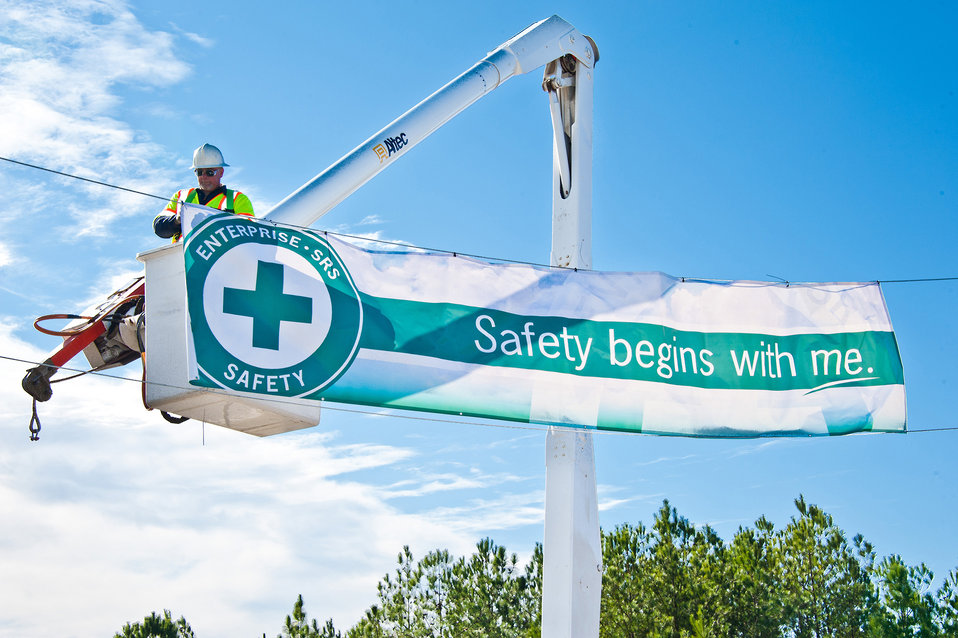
Safety at Savannah

A Savannah River Nuclear Solutions, LLC employee hangs one of several “Safety Begins with Me” banners near an entrance leading into DOE’s Savannah River Site in Aiken, S.C.